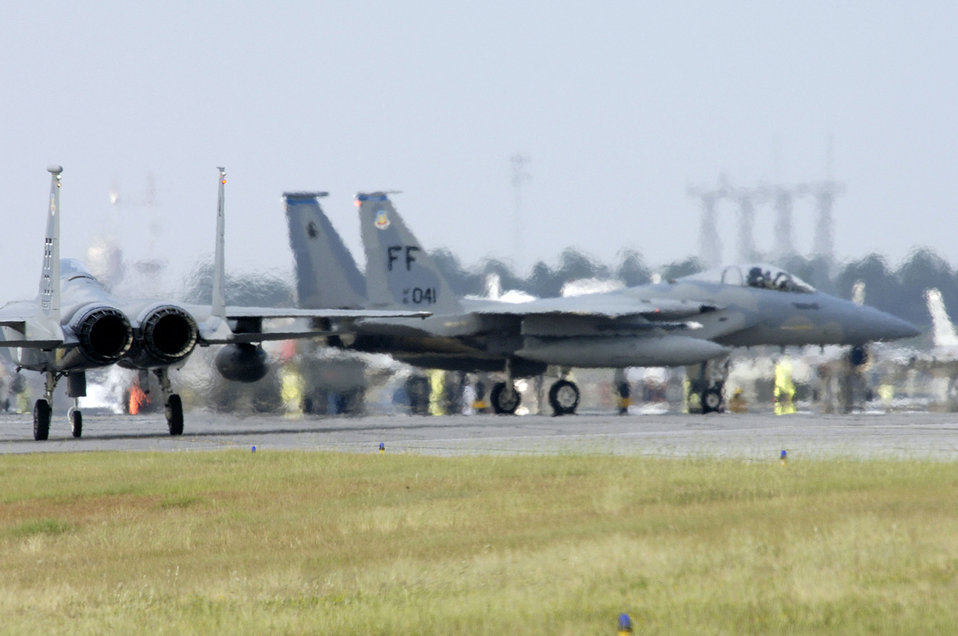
Eglin provides shelter for Hurricane Ophelia evacuees

EGLIN AIR FORCE BASE, Fla. -- F-15 Eagles from Langley Air Force Base, Va., arrive here Sept. 13 during an evacuation from Hurricane Ophelia.